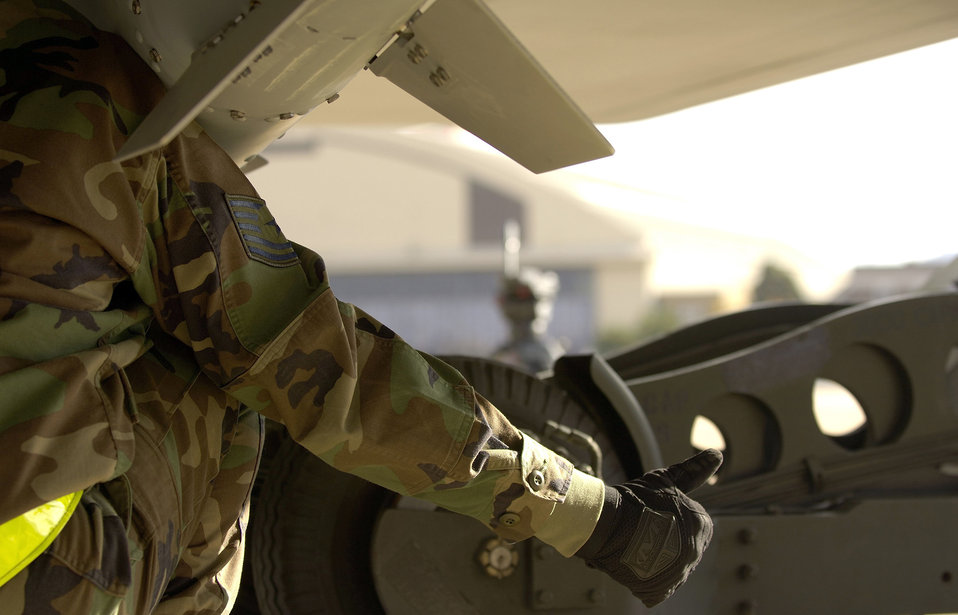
Combat Hammer

HILL AIR FORCE BASE, Utah -- Tech. Sgt. Shawn Mullins, a weapons load crew chief, signals his weapons load driver to raise a joint direct attack munition into the bomb bay of an F/A-22 Raptor here. The bomb load, on Oct. 18, was part of exercise Combat Hammer. The Raptors are from the 27th Fighter Squadron at Langley, Air Force Base, Va. The unit deployed here Oct. 15 with a twofold goal: complete a deployment and to generate a combat-effective sortie rate away while deployed.